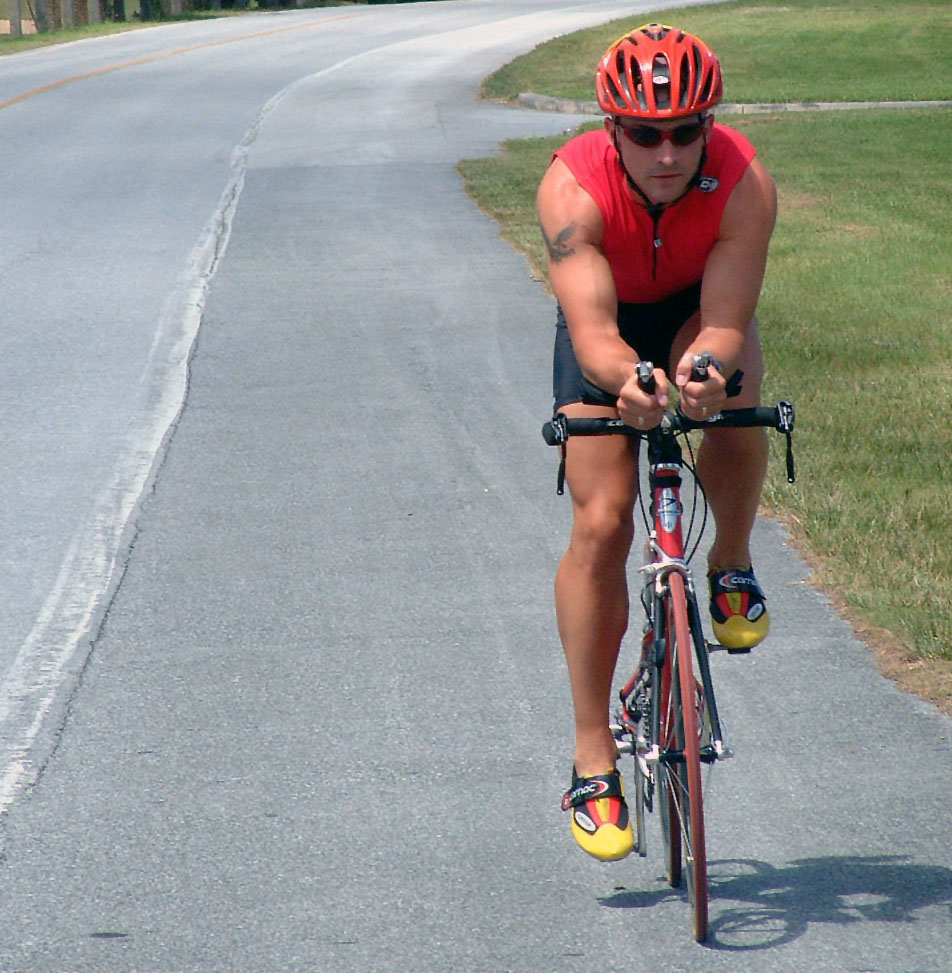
Ironman3

KADENA AIR BASE, Japan -- Shawn Hnatko trains here for the Ironman Triathlon World Championships in Hawaii on Oct. 18. During the competition, he will swim 2.4 miles, bike 112 miles and run a 26.2-mile marathon.